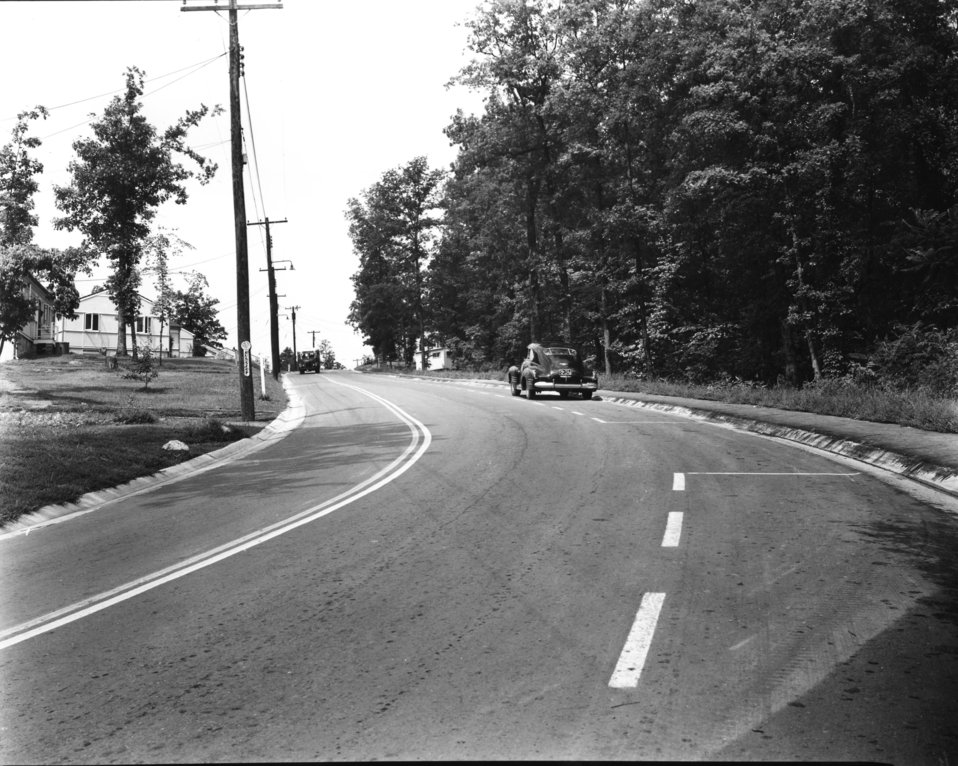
Recreation at Oak Ridge